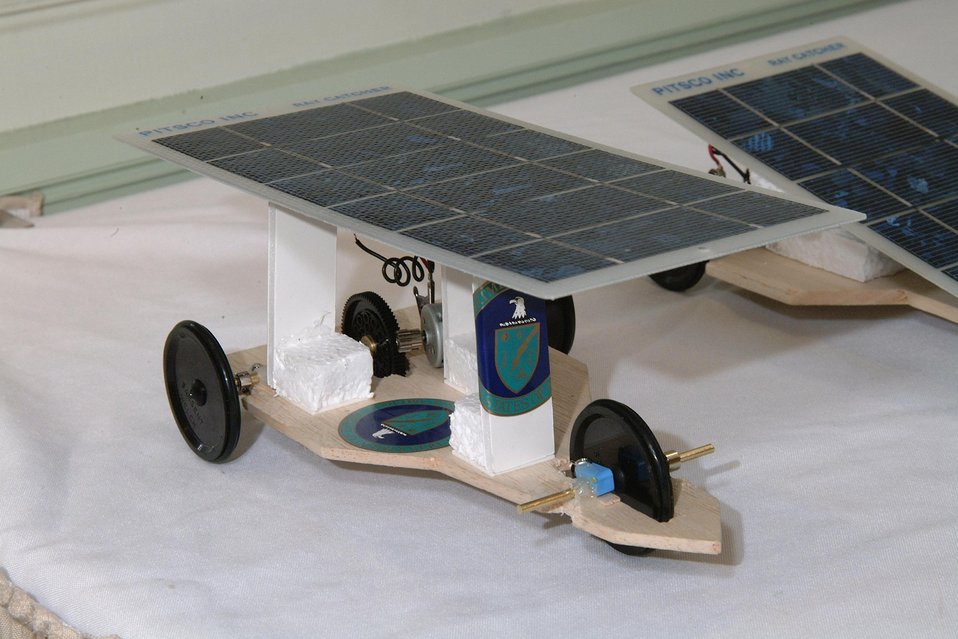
A MODEL SOLAR CAR BUILT BY STUDENTS PARTICIPATING IN THE NATIONAL MIDDLE SCHOOL SCIENCE BOWL.

THE DEPARTMENT OF ENERGY SPONSORED THE FIRST NATIONAL MIDDLE SCHOOL SCIENCE BOWL ON MARCH 21-24, 2002 IN WASHINGTON, DC AT DOE HEADQUARTERS FORRESTAL BUILDING. ON MARCH 23RD THE COMPETITION INCLUDED A MODEL SOLAR CAR RACE HELD AT THE NATIONAL 4-H CONFERENCE CENTER, CHEVY CHASE, MD. THE MODEL CARS WERE DESIGNED AND CONSTRUCTED BY THE TEAM MEMBERS.